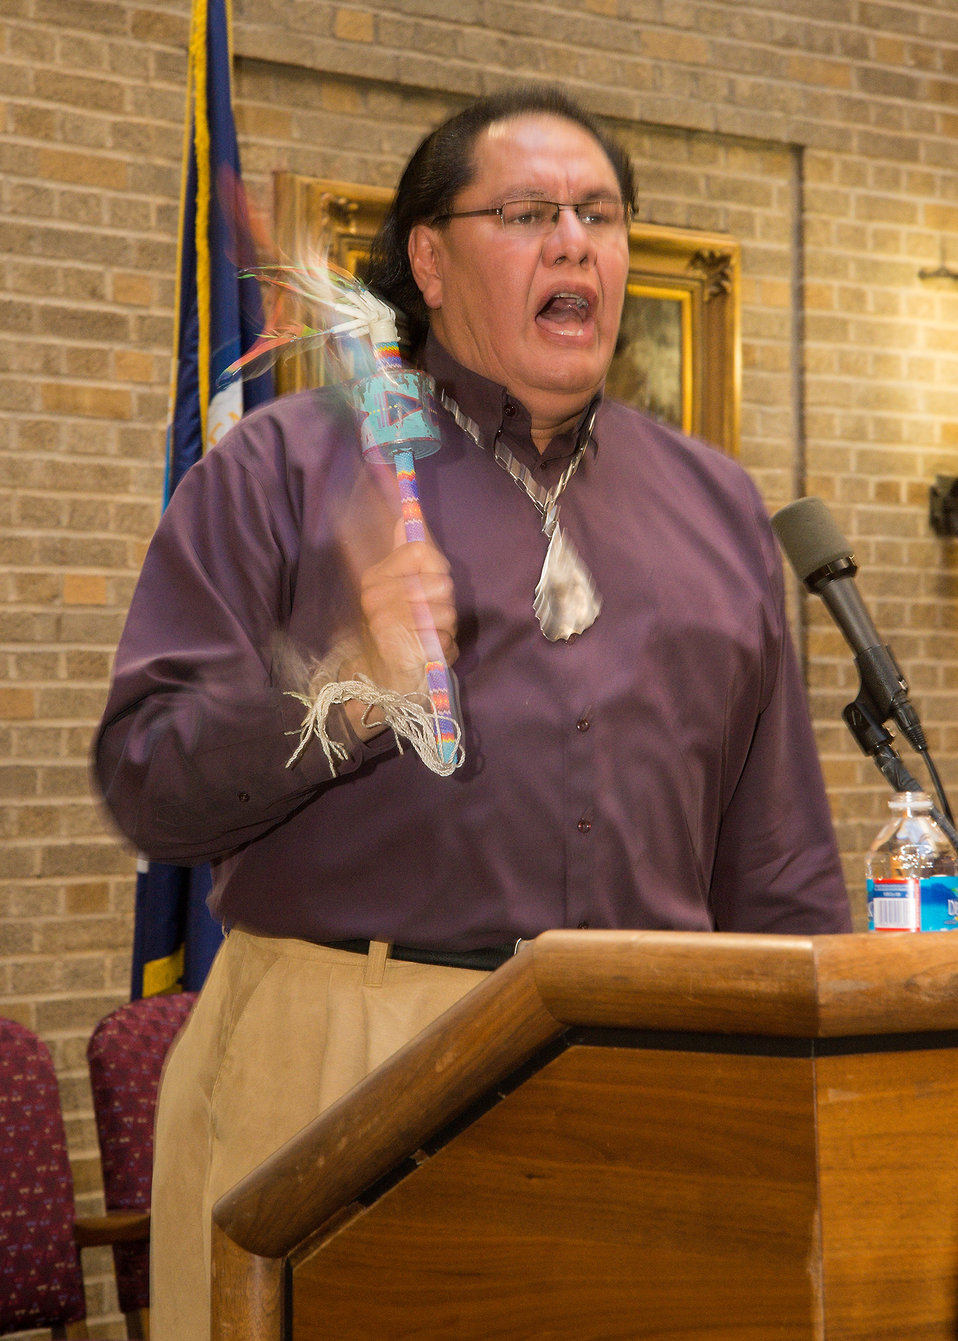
National American Indian Museum employee Dennis Zotigh performs the music of American Indian tribes from across the U.S. at the 2013 American Indian and Alaska Native Heritage Observance at the U.S. Department of Agriculture (USDA), on Thursday, Nov. 14, 2013 in Washington, D.C. The theme of this year’s event was “Guiding Our Destiny with Heritage and Traditions.”